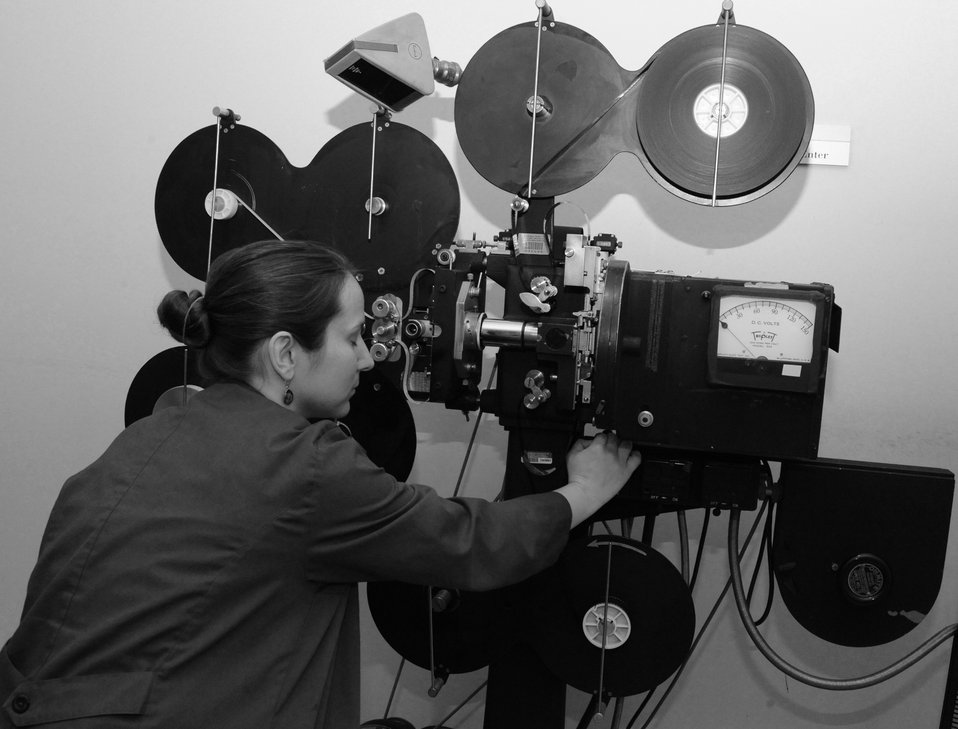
One of a series of recreations of photos of the Depue printer from 1952.; Location: Archives 2 - Motion Picture Preservation Lab, College Park, MD